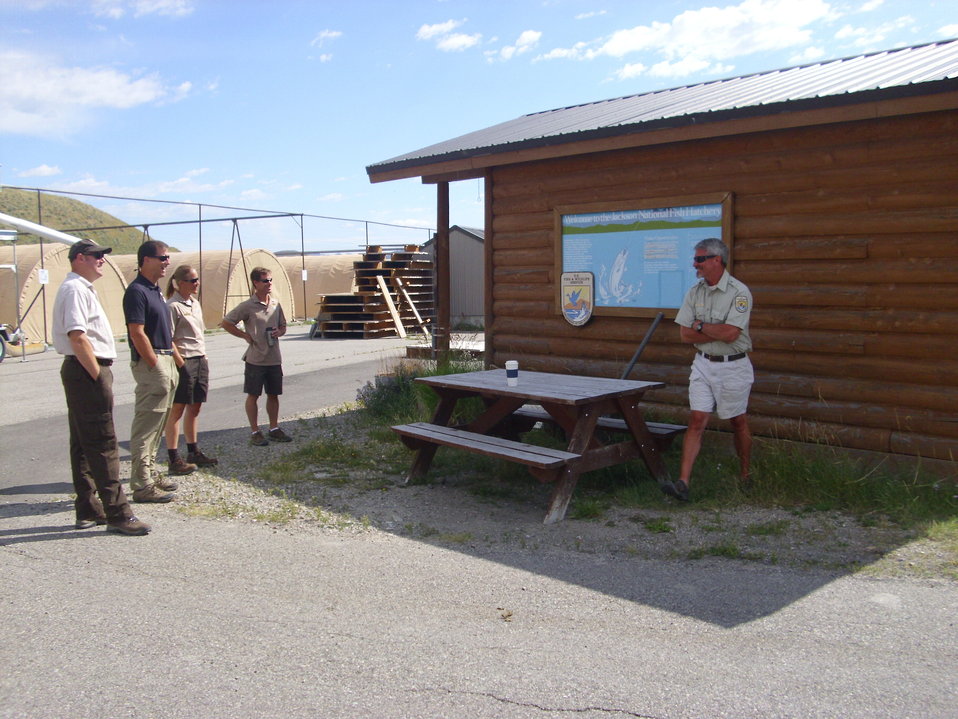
Dan at the Jackson National Fish Hatchery

Sharing a laugh during the walking tour of the facilities.